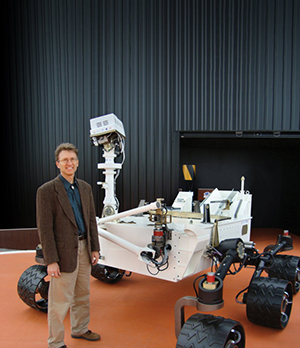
The Curiosity Rover, key to NASA's Mars Science Laboratory mission, bears three systems that Los Alamos National Laboratory helped developed.

The systems LANL helped develop are: ChemCam, ChemMin, and Multi-Mission Radioisotope Theremoelectric Generator Unit.